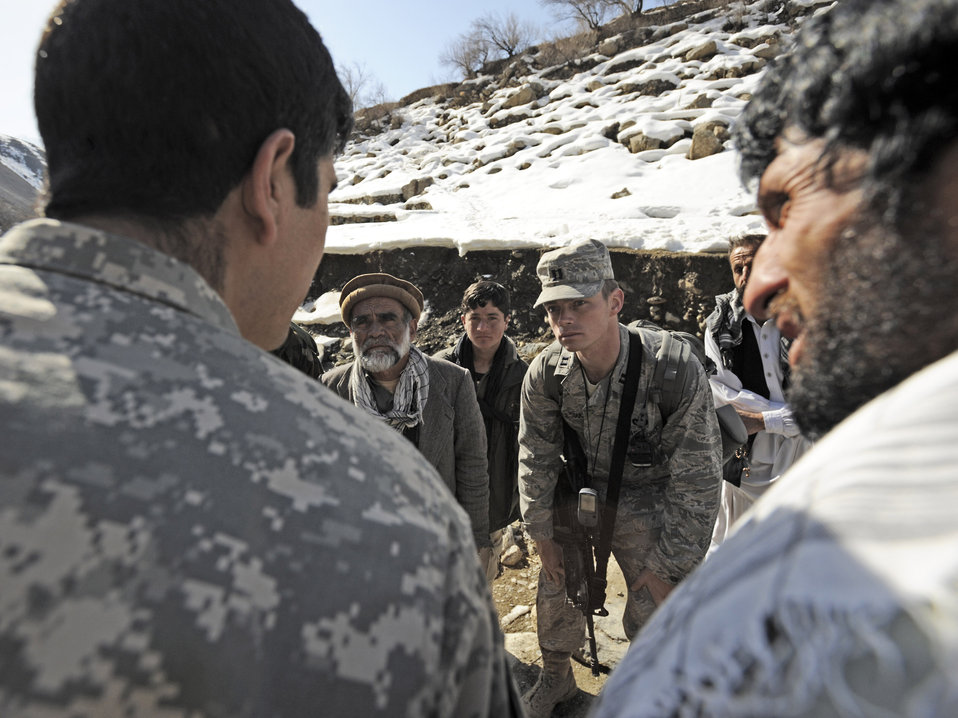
Servicemembers assist Afghans with economic development

Capt. Patrick Kolesiak talks with local villagers about energy issues in Afghanistan March 4 in Panjshir, Afghanistan. Captain Kolesiak is the Panjshir Provincial Reconstruction Team lead civil engineer.